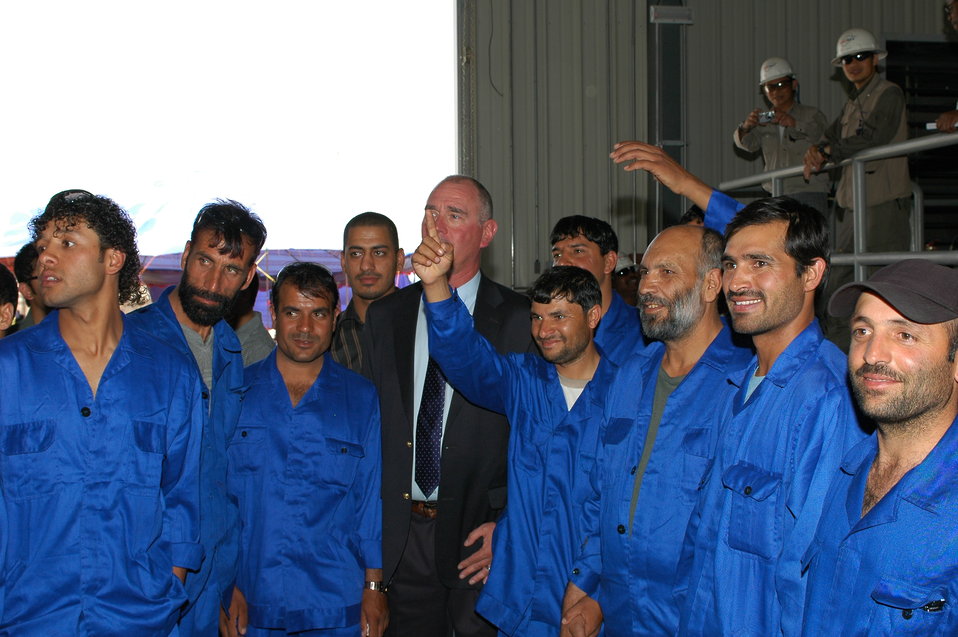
105 MW Tarakhil Power Plant Handover